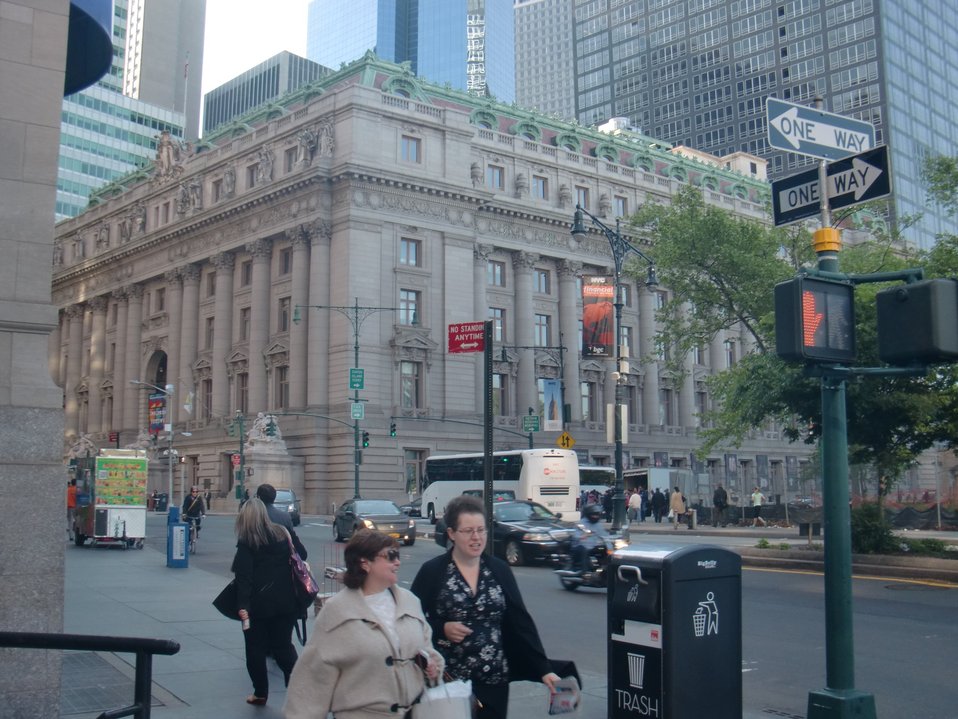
External shot of Alexander Hamilton Custom House which houses the Archives at NY; Location: National Archives at New York, New York, New York